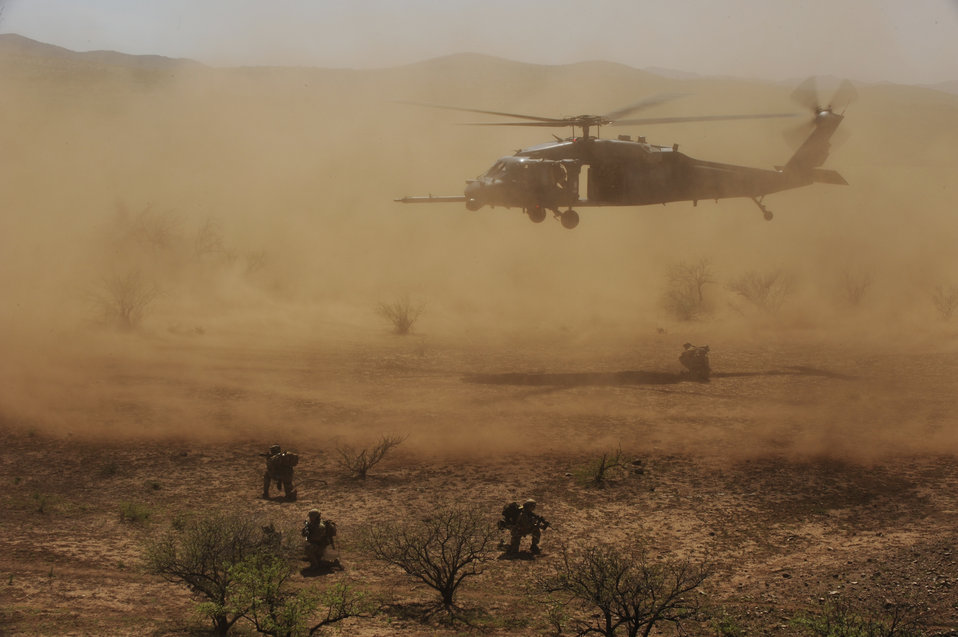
Angel Thunder 2010

An HH-60 Pave Hawk crew drops off pararescuemen April 15, 2010, during exercise Angel Thunder 2010 in the desert surrounding Davis-Monthan Air Force Base, Ariz. The Pave Hawk crew is from the Alaska Air National Guard's 210th Rescue Squadron at Kulis Air National Guard Base in Anchorage, Alaska. The pararescue crew is from the 103rd RQS in Long Island, N.Y.